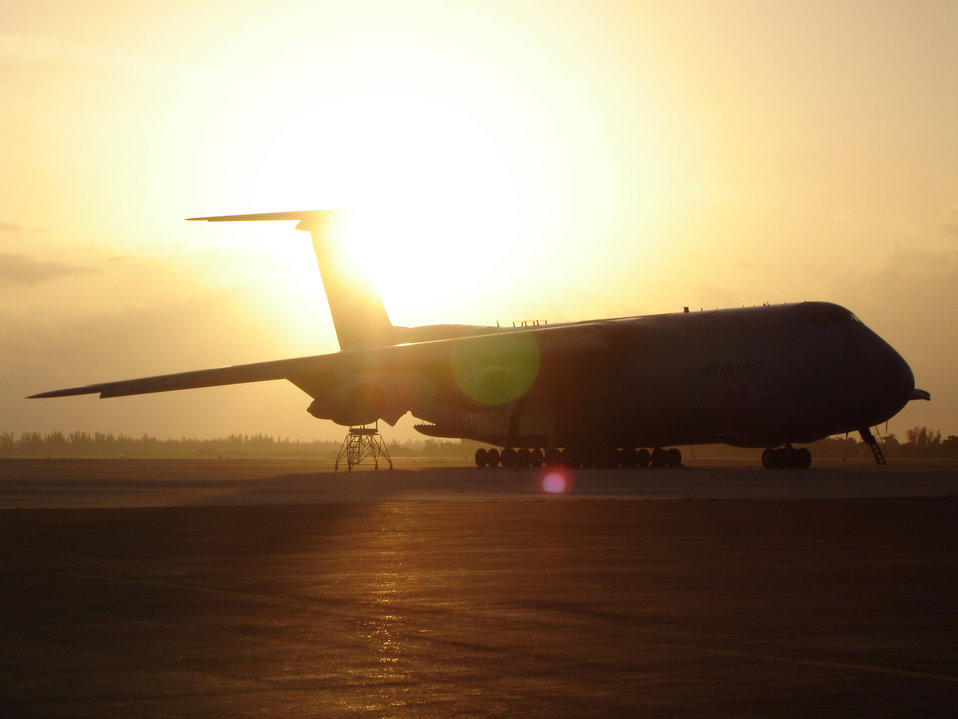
C-5A Galaxy participates in Cactus Aloha

A C-5A Galaxy from the 68th Airlift Squadron in San Antonio waits for its passengers at Homestead Air Reserve Base, Fla., in 2006. The C-5 crew flew reservists and equipment from the 482nd Fighter Wing in support of exercise Cactus Aloha at Hickam AFB, Hawaii,